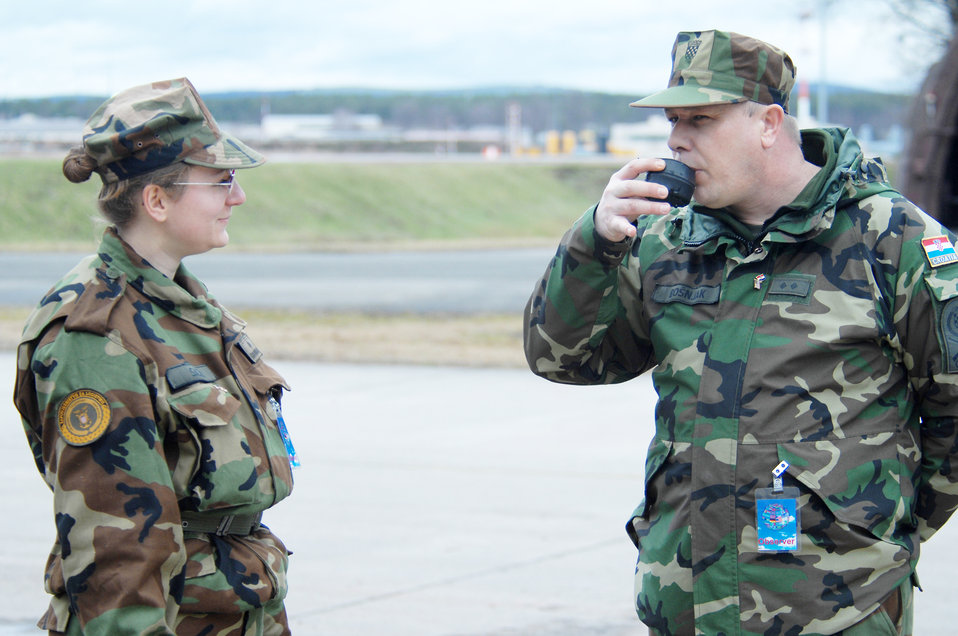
NATO partnerships

Croatian army 2nd Lt. Sabina Sacer and Private 1st Class Stanko Bosnjak take a taste of water they have just purified using a reverse osmosis water purification unit Feb. 24, 2010 at Ramstein Air Base, Germany.